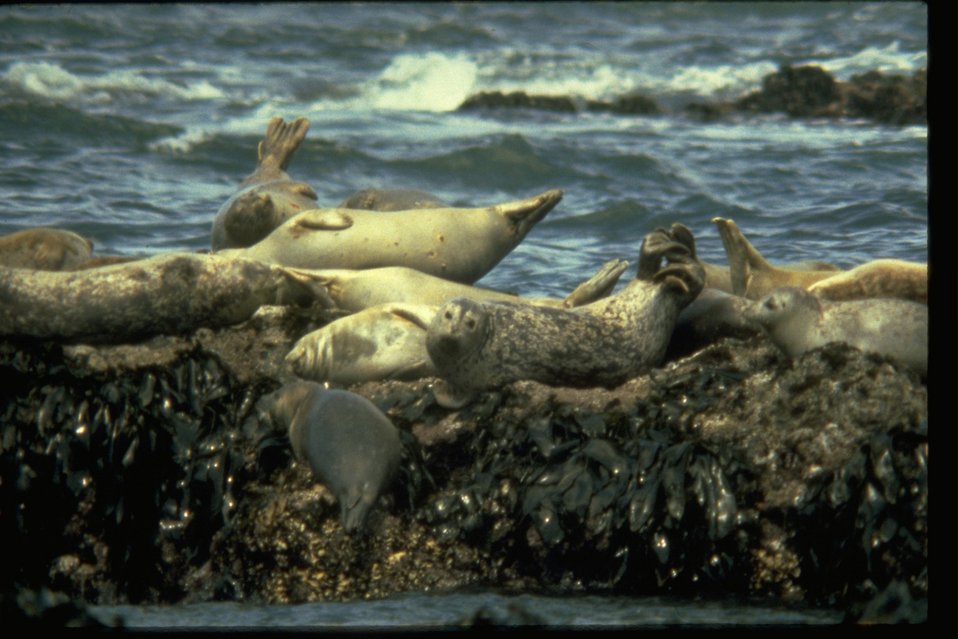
Harbor seals laying on a rock along the coast.